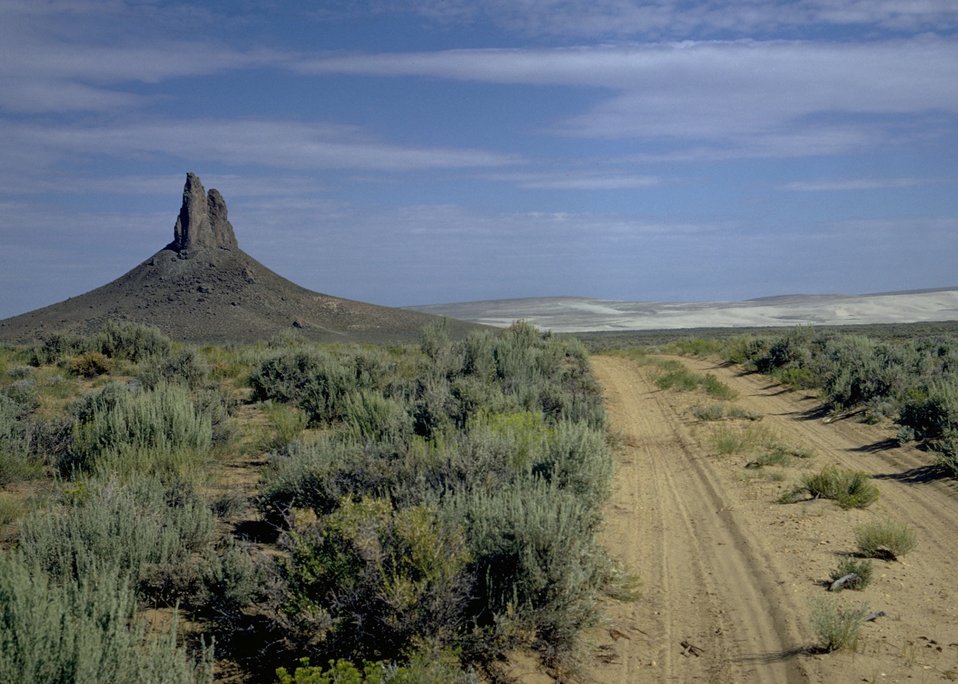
Boar's Tusk scenic view.